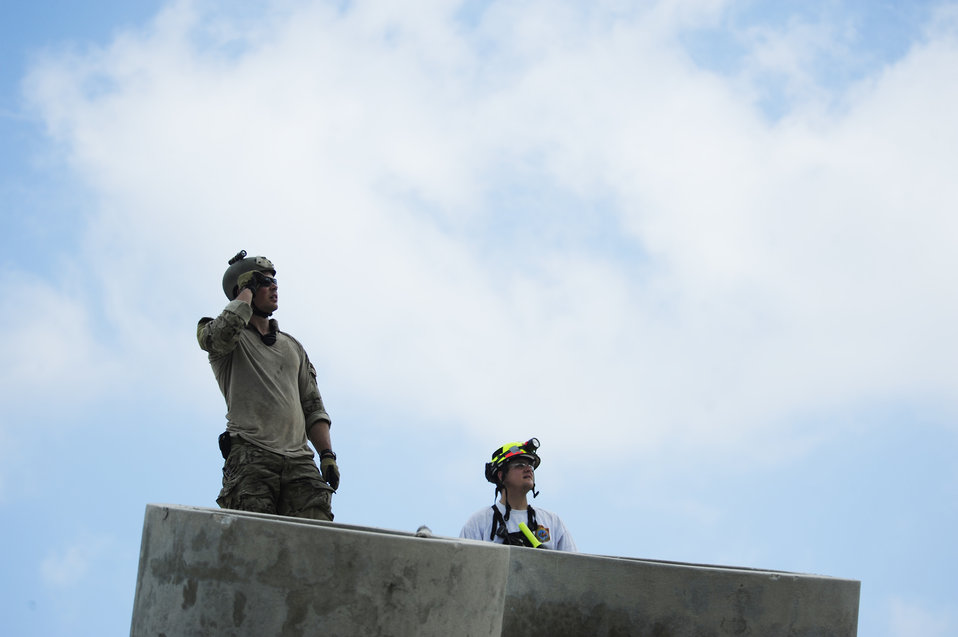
Haiti Earthquake Relief

A pararescueman and a member of the Fairfax County Urban Search and Rescue Team, Va., look at a building during rescue operations Jan. 17, 2010, in Port-au-Prince, Haiti. The pararescueman is assigned to the 23rd Special Tactics Squadron at Hurlburt Field, Fla. Department of Defense assets have been dispatched to Haiti to assist with humanitarian assistance and disaster relief after a magnitude 7 earthquake hit the country Jan. 12, 2010.